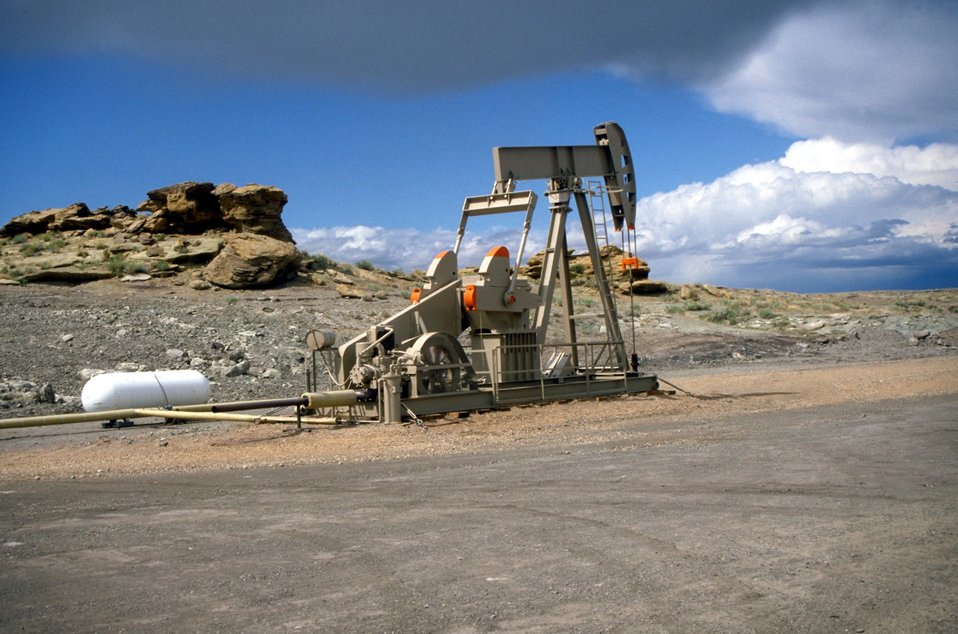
Pump unit producing coal bed methane near Price, Utah.